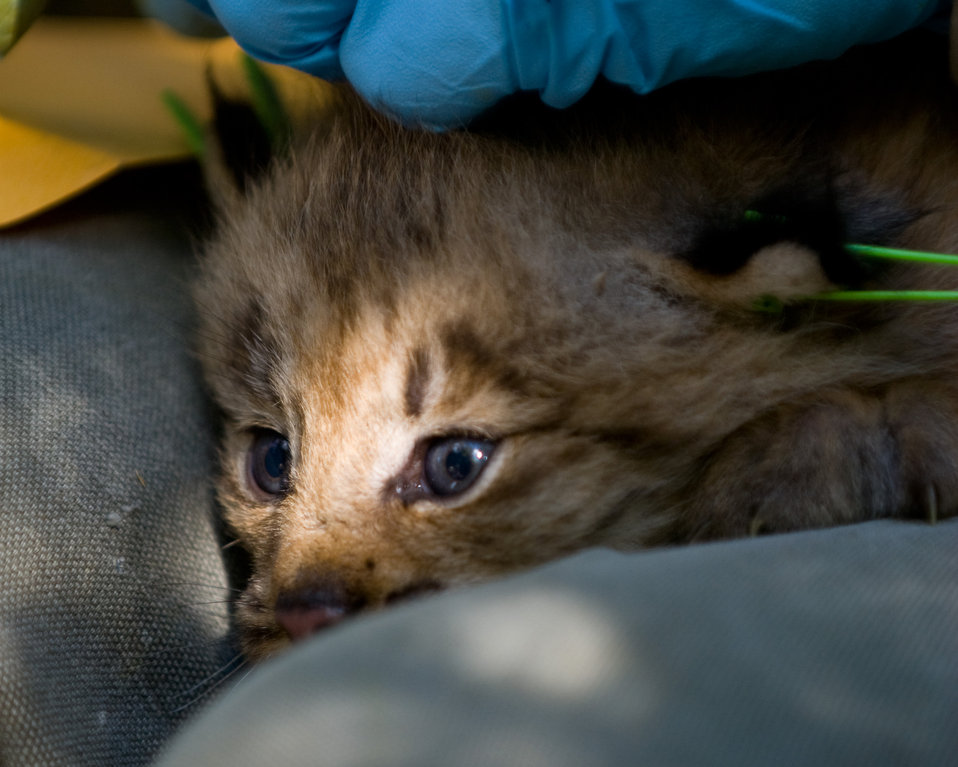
Canada Lynx Kitten

A kitten is registered with ear tags and an RFID implant.